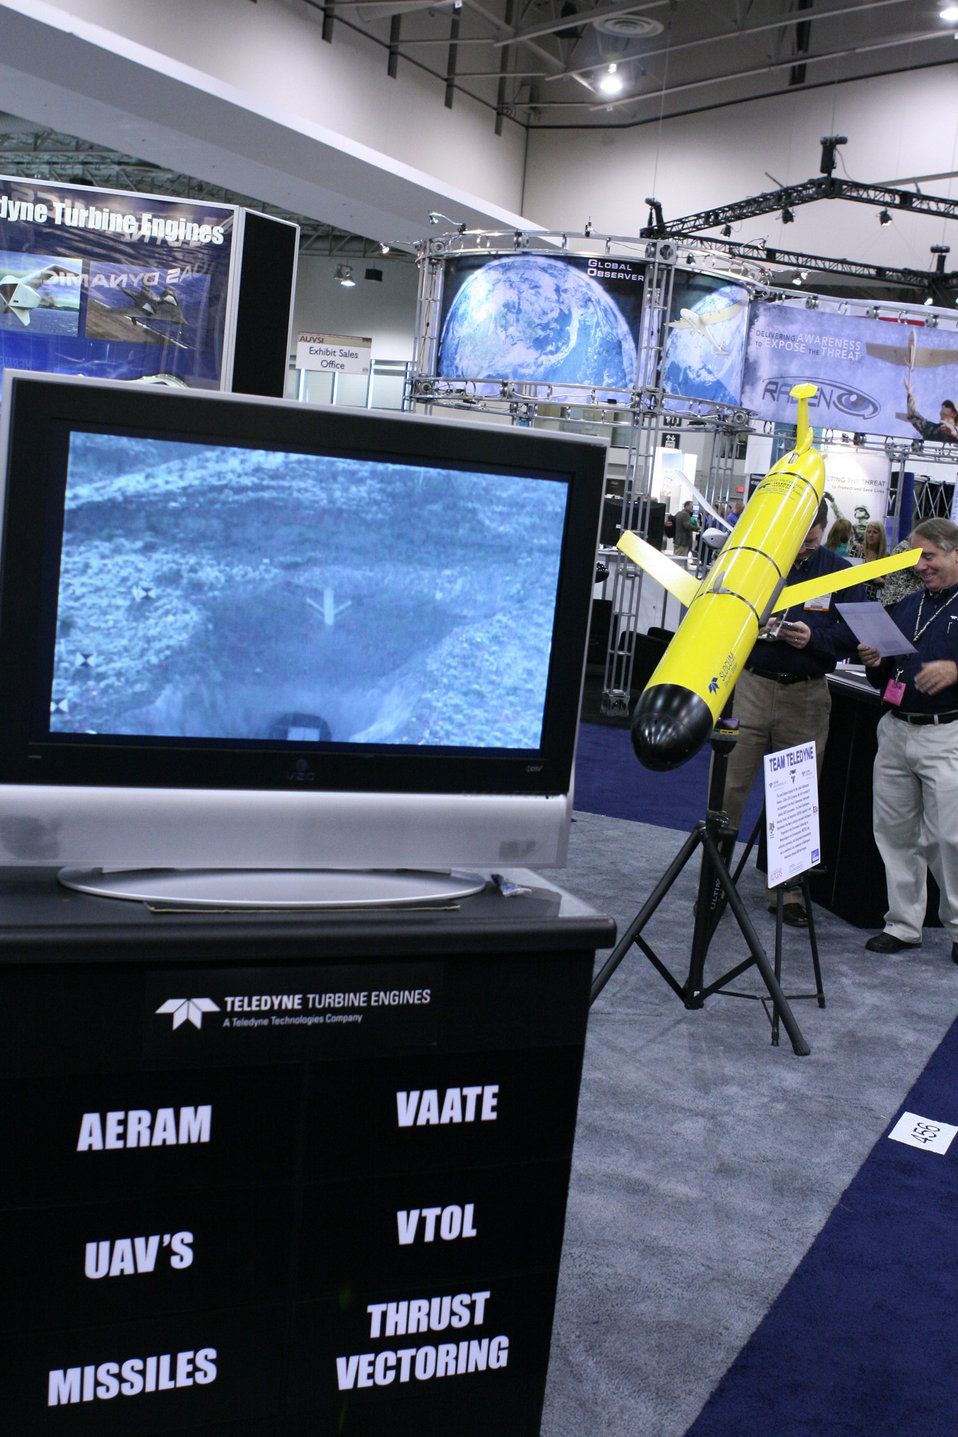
Convention showcases unmanned capabilities

An unmanned maritime surveillance system is displayed during the Association for Unmanned Vehicle Systems International Unmanned Systems North America 2009 Convention Aug. 11 at the Washington, D.C., Convention Center. More than 5,000 people attended the four day conference and exhibit to see the more than 320 unmanned aerial, maritime and ground systems on display.